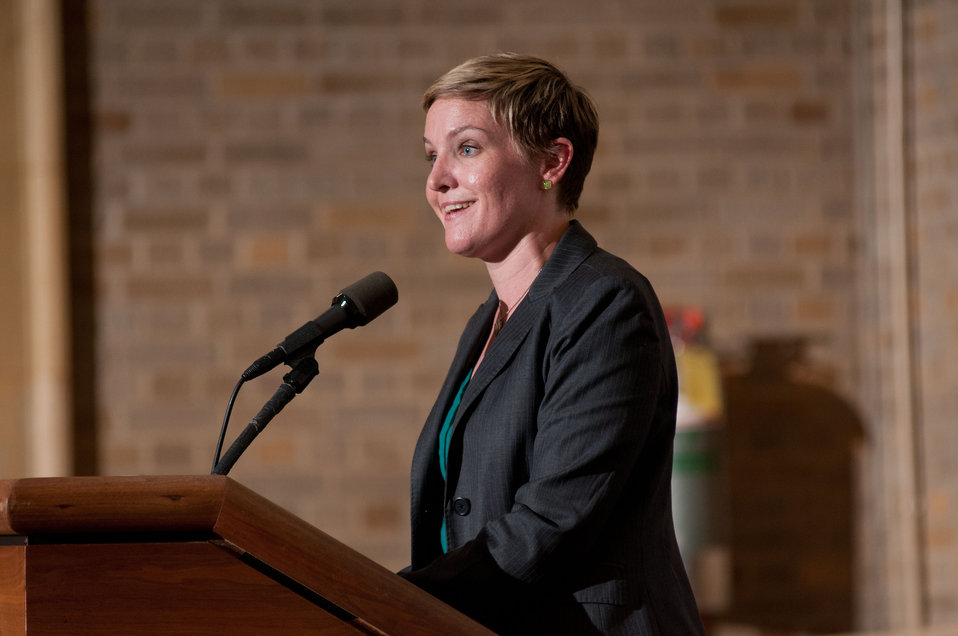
U.S. Department of Agriculture (USDA) Faith-based and Neighborhood Partnerships Acting Director Norah Deluhery welcomed guests and moderated the Iftar celebration, co-sponsored by the U.S. Department of Agriculture, U.S. Agency for International Development (USAID) and Islamic Relief USA, on Tuesday, August 7, 2012, in the USDA Whitten Building, in Washington, D.C. Ramadan is the month of fasting, intensive prayer, sacrifice and worship for Muslims around the world. Throughout this month, Muslims fast during the day, abstaining from consuming food from dawn to dusk and using this time to purify spiritually. Fasting reminds Muslims of the poverty and hunger suffered by many in the United States and worldwide. It is a connection with those who are hungry not through devotion, but through the many global factors that lead to hunger and famine. Iftar is the meal at which Muslims break their fast at sunset, usually by eating dates, according to the Prophetic tradition.